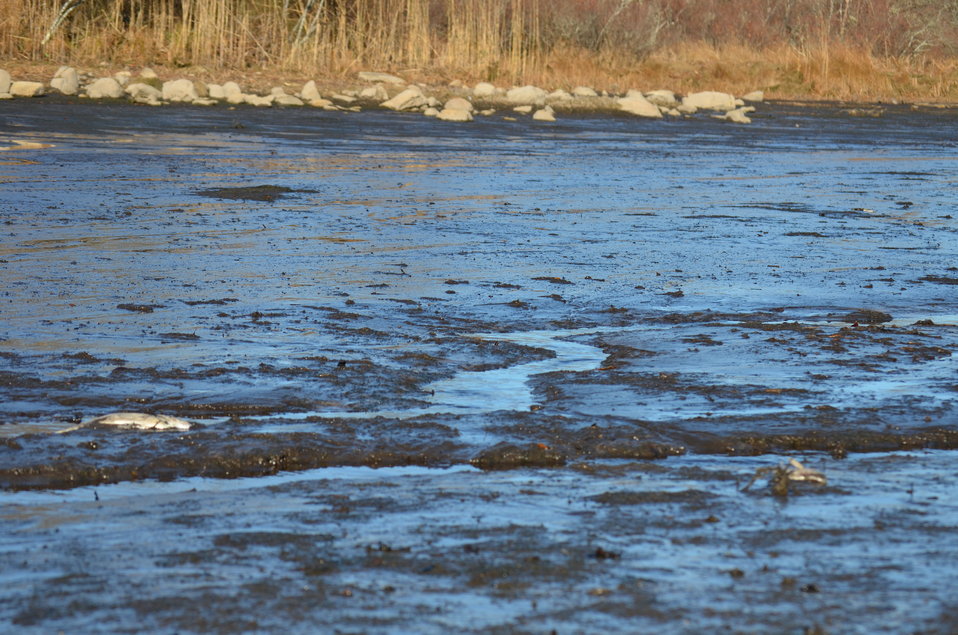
Dead fish at Trustom Pond National Wildlife Refuge (RI)

Freshwater fish like bass and perch couldn't survive the saltwater influx.